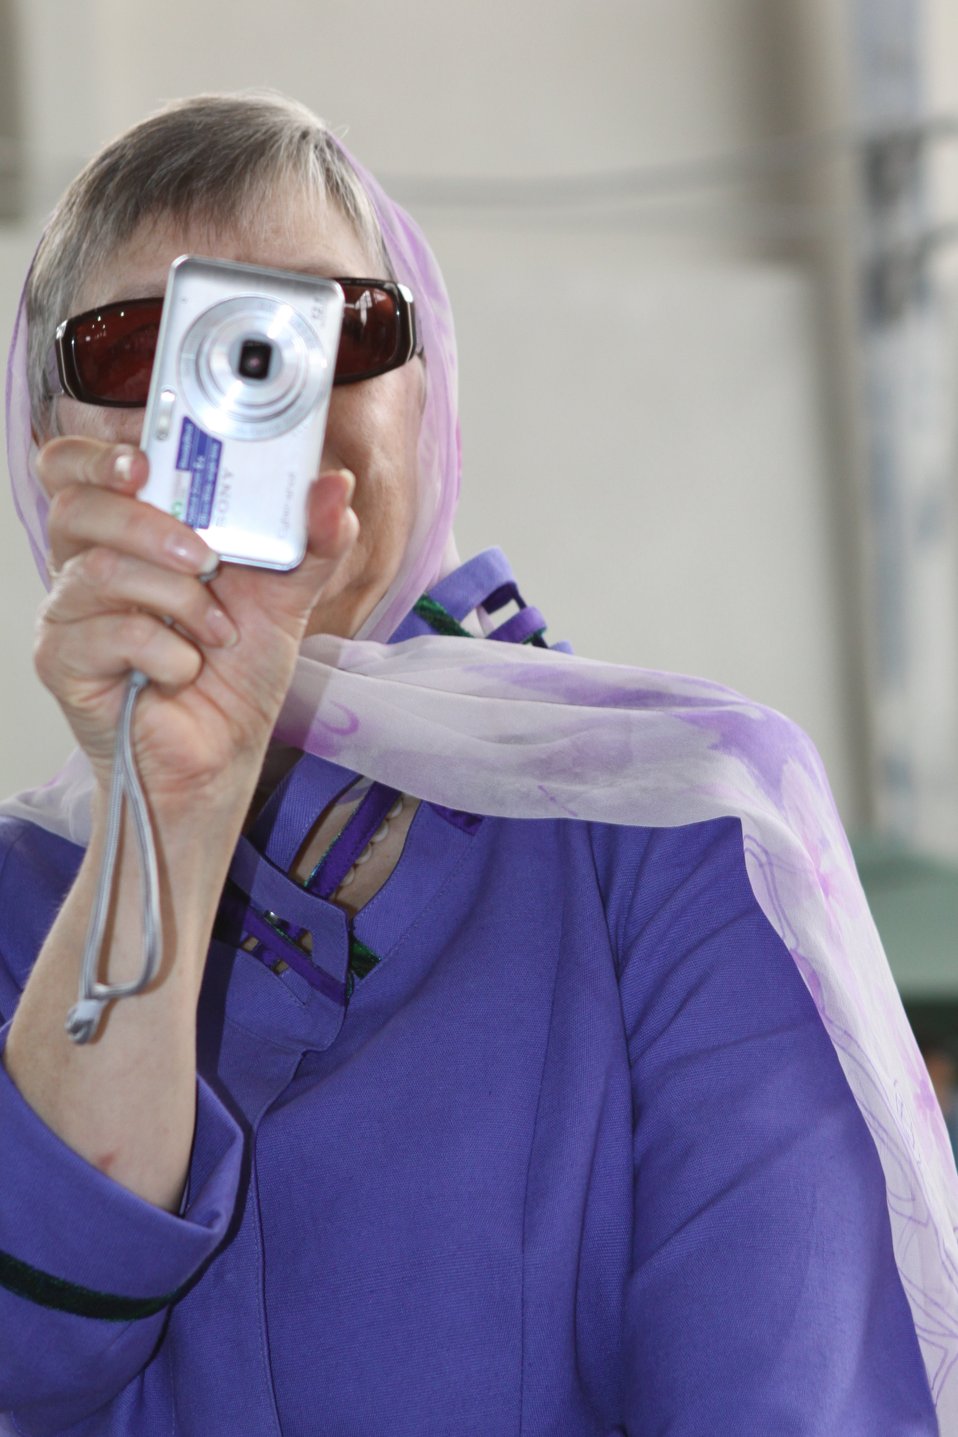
100525 Hirat Marble Conference 188